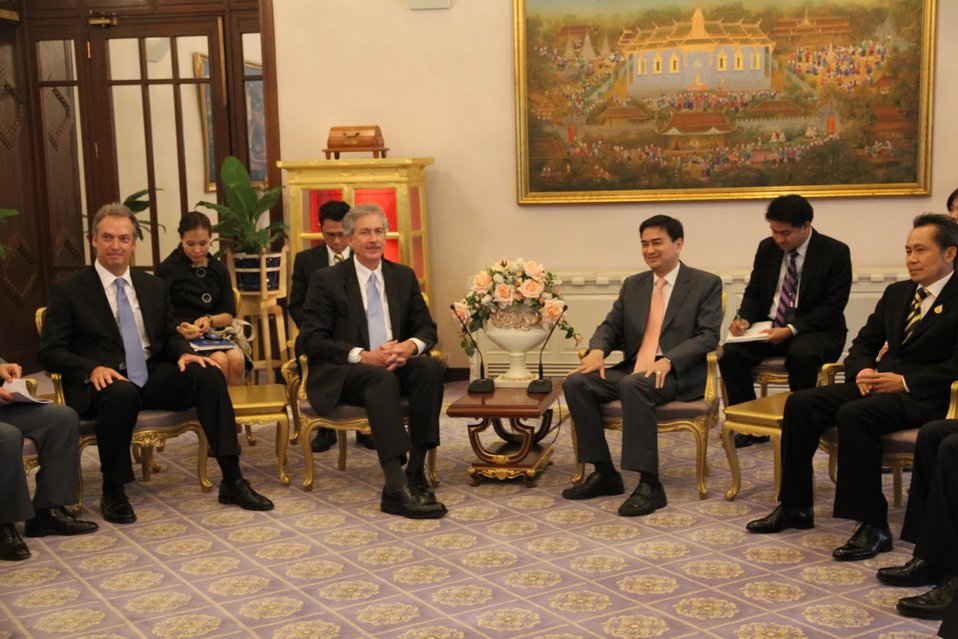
Under Secretary Burns, Ambassador John, Thai Prime Minister Abhisit Vejjajiva, and Thai Senior Government Officials Discuss U.S.-Thailand Relations

U.S. Under Secretary of State William J. Burns, U.S. Ambassador Thai Prime Minister Abhisit Vejjajiva discuss U.S.-Thailand relations at the Thai Government House in Bangkok, Thailand, on June 16, 2010.